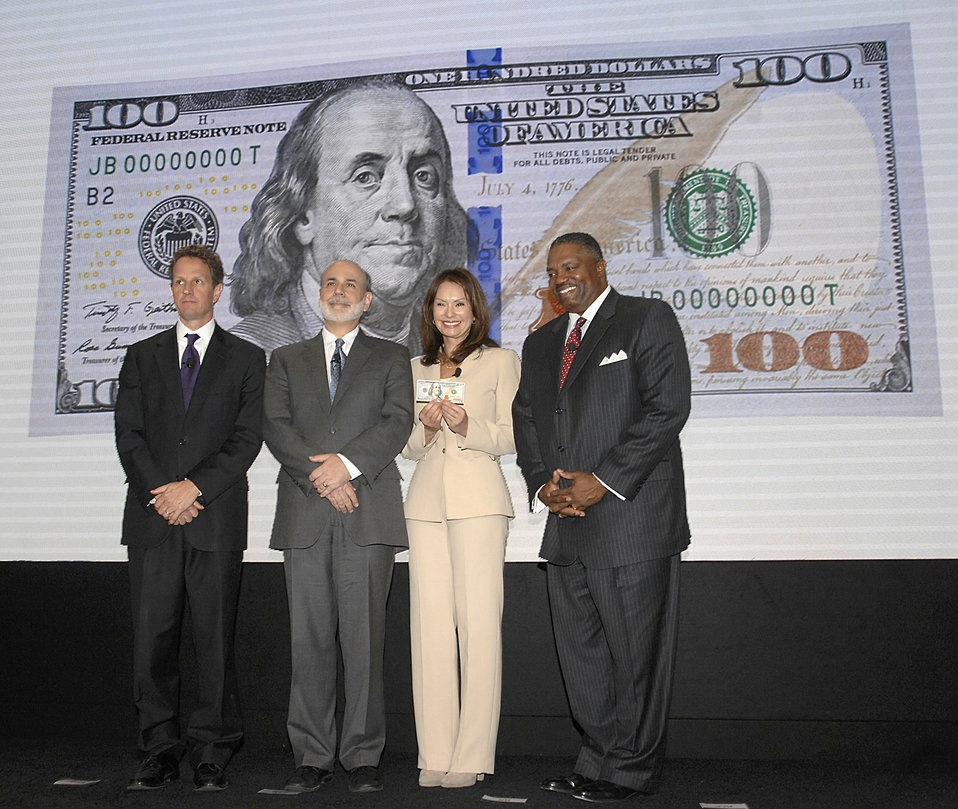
Unveiling of new $100 note, 4/21/2010

Treasury Secretary Geithner, Federal Reserve Chairman Bernanke, Treasurer Rios, and United States Secret Service Deputy Director Prewitt unveil the new design of the $100 note at Treasury Department on April 21, 2010.